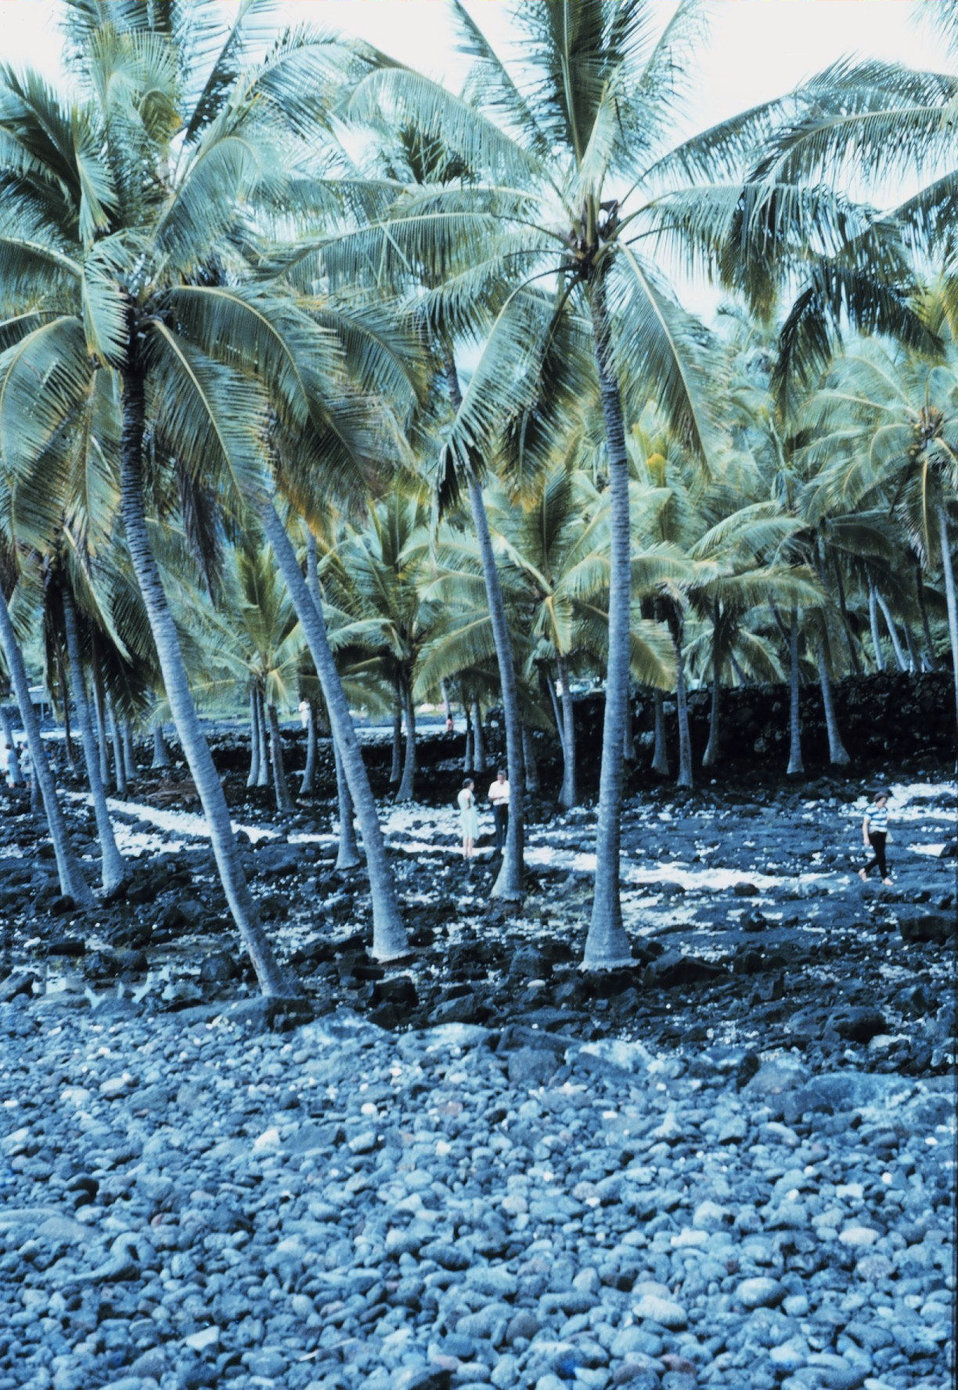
City of Refuge